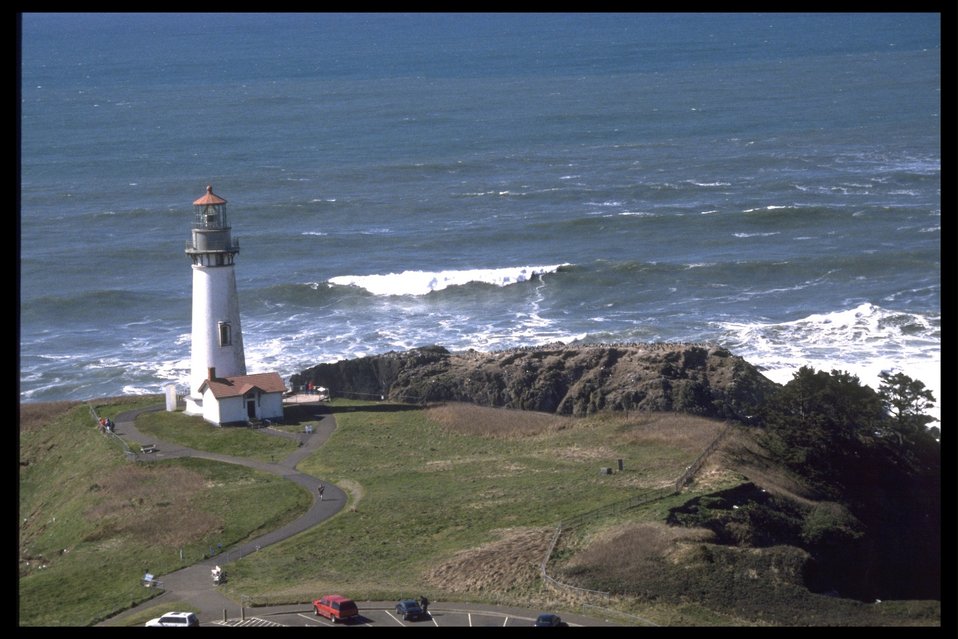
Yaquina Head Lighthouse.